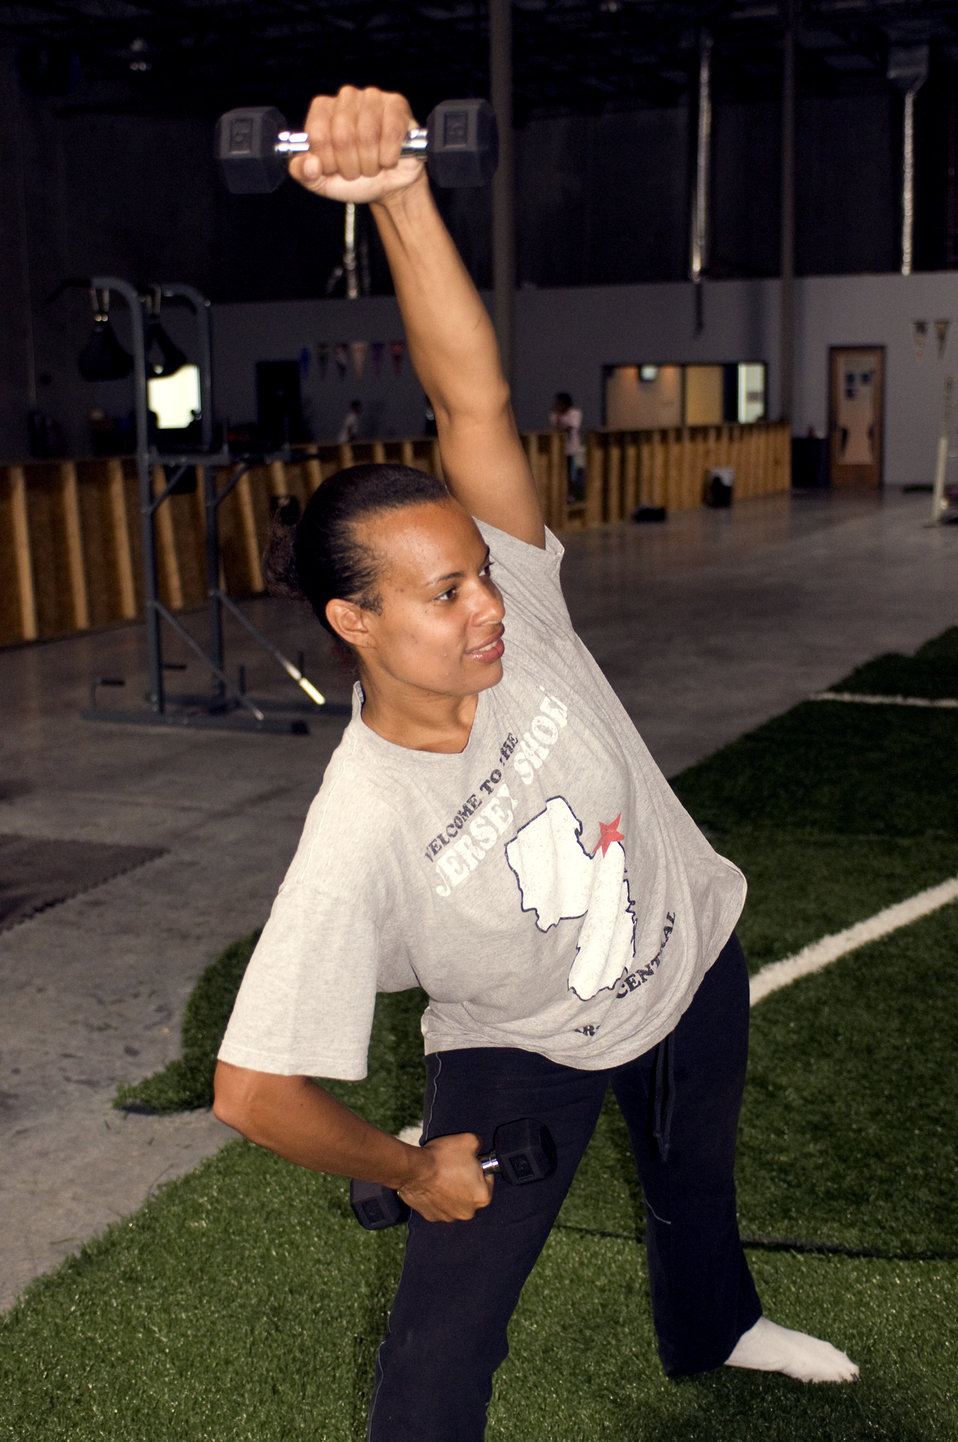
Photographed in an indoor gymnasium, this young woman was warming up prior to her vigorous exercise routine. Here she was, holding a light-weight dumbbell in each hand, and was working her core, or torso muscles by bending sideways at the hip, thereby, stretching the flank, or side muscles on the opposite side. Her left arm was extended over her head, and her right was bent at the elbow, with her fist on her right thigh, weights in hand.